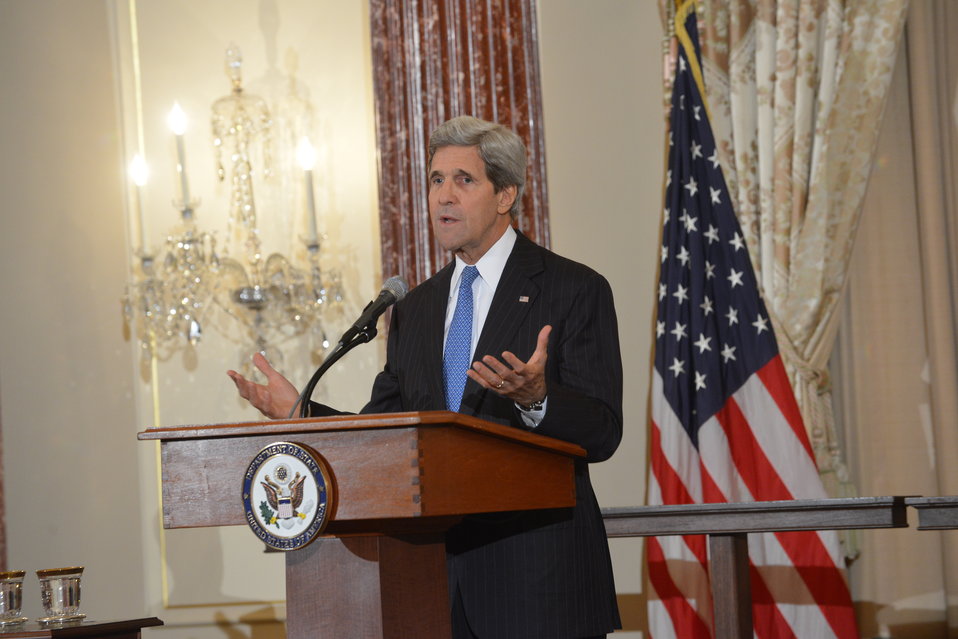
Secretary Kerry Hosts an Iftar

U.S. Secretary of State John Kerry hosts an Iftar to commemorate the month of Ramadan at the U.S. Department of State in Washington, D.C., on July 24, 2013.